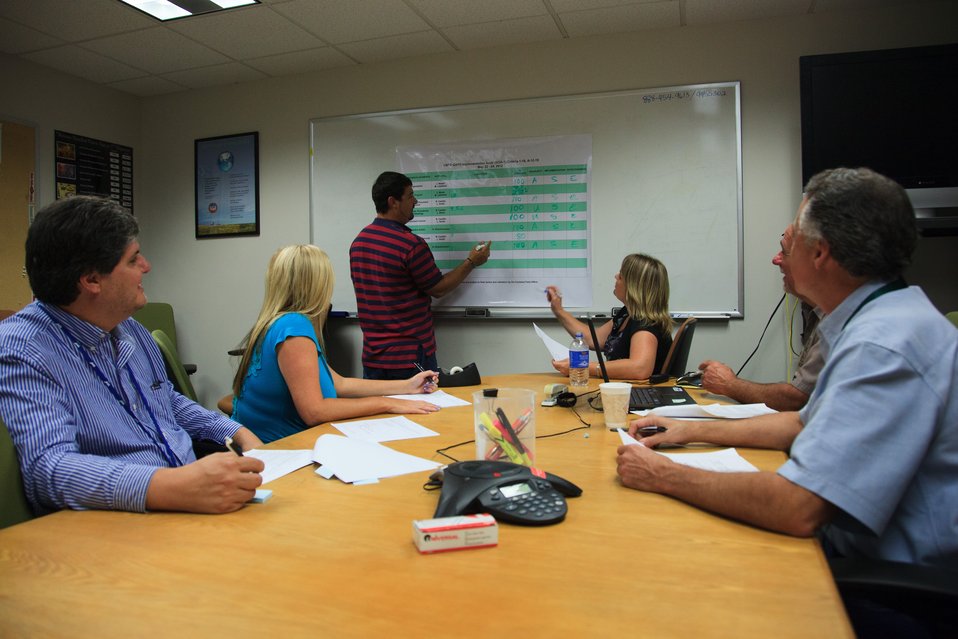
Carlsbad Field Office Technical Assistance Contractor Shares In Top Honor

Members of the Carlsbad Technical Assistance Contractor discuss audit criteria for quality assurance implementation.
***

The Carlsbad Field Office Technical Assistance Contractor’s (CTAC) parent company, Portage, Inc., and its 400 employees nationwide recently achieved a significant milestone by exceeding one million hours worked over 560 days without a lost-time injury or illness.

CTAC is a small group responsible for technical and quality assurance resources for the DOE Carlsbad Field Office (CBFO), which provides oversight for the Waste Isolation Pilot Plant (WIPP) and the National Transuranic (TRU) Program.